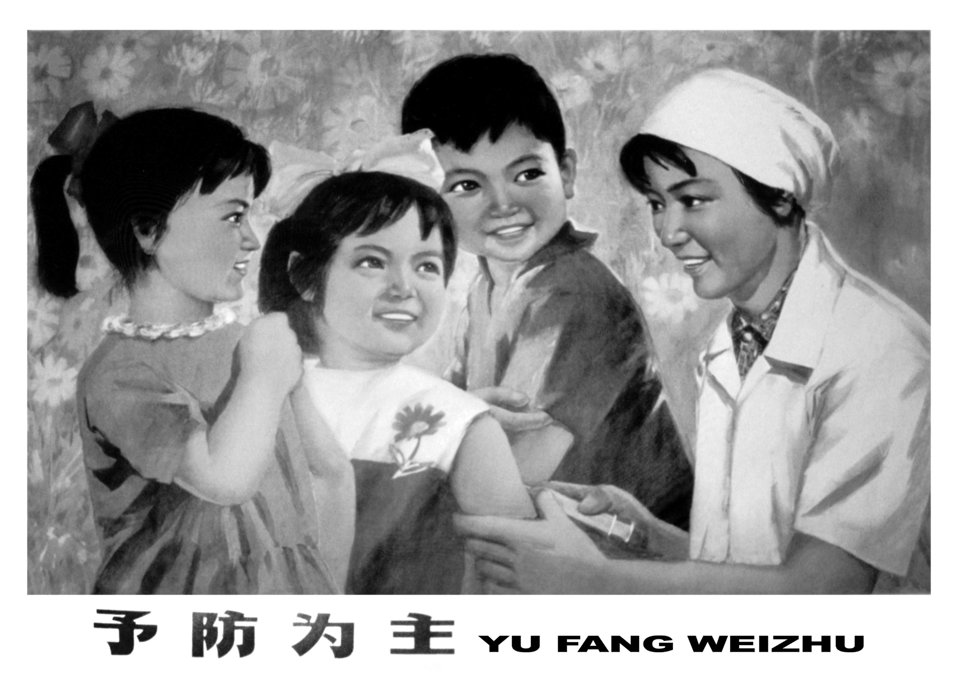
Early pre-1979 Asian poster promoting youth vaccination for Smallpox and Measles.